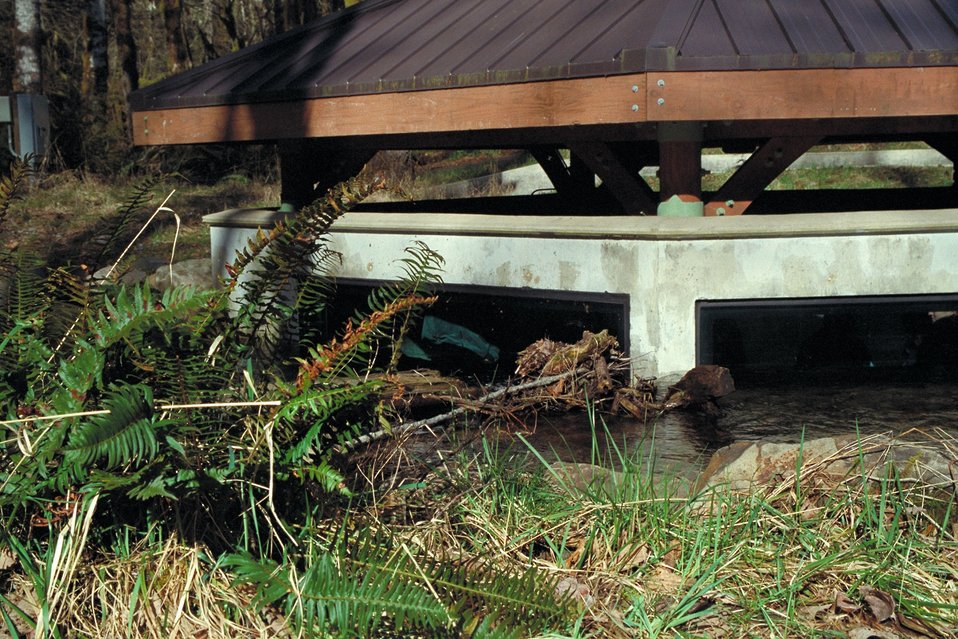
Cascade Stream Watch is an environmental education program conducted at BLM's Wildwood Recreation site.